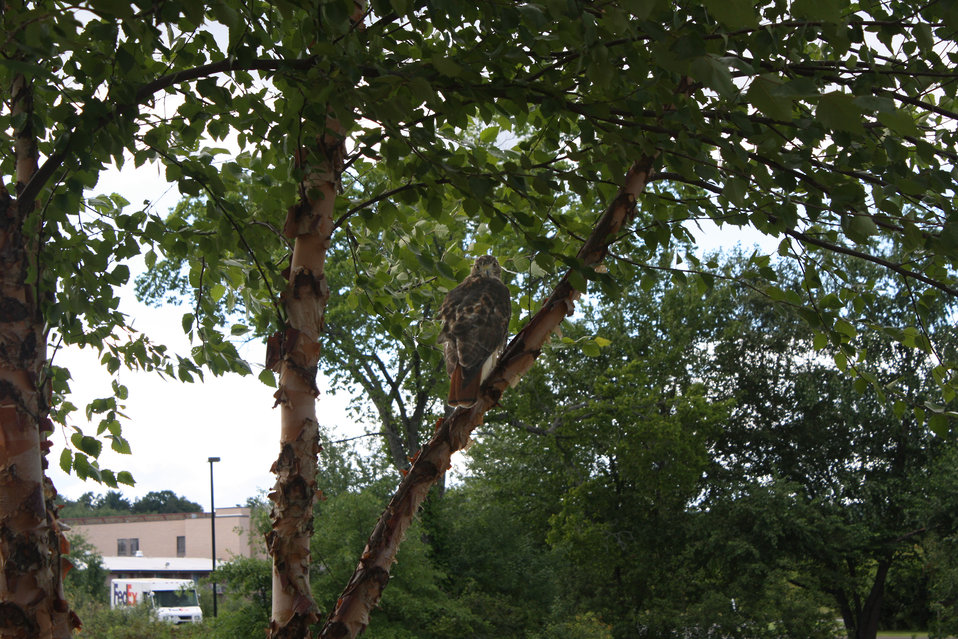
Red-tailed Hawk looking at you

Hawk outside of the U.S. Fish and Wildlife Service Northeast Regional Office, August 14 2013, looking at camera.